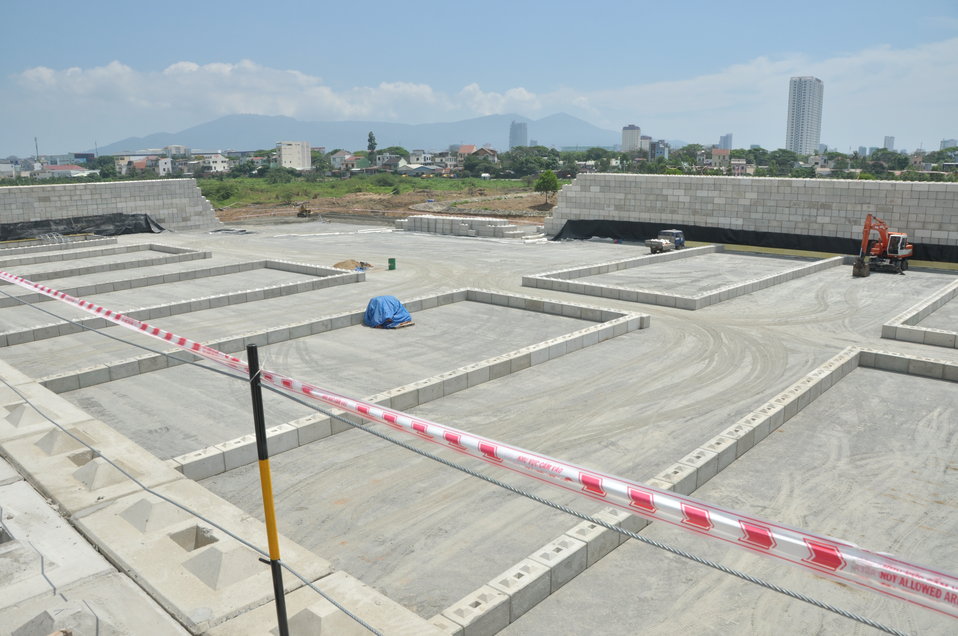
Media Tour of Environmental Remediation of Dioxin Contamination at Danang Airport

Danang, Vietnam
April 24, 2013